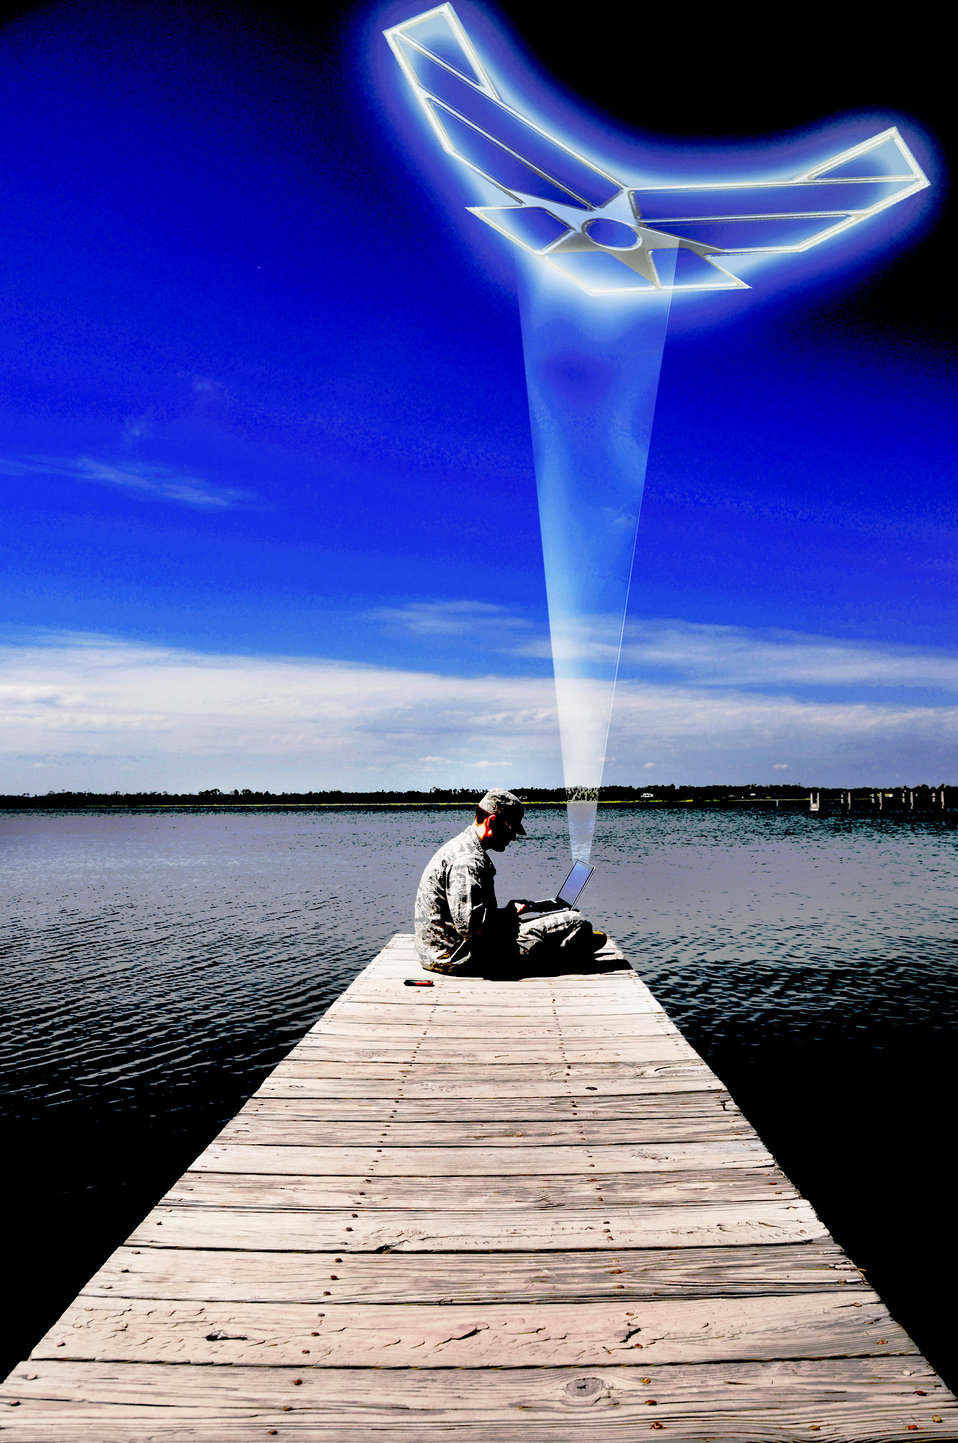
Air Force reservists 'tweet,' blog and post their way to cyberspace

Social networking has taken the Air Force above and beyond a new horizon, ushering in a new era in the way we share the Air Force story.